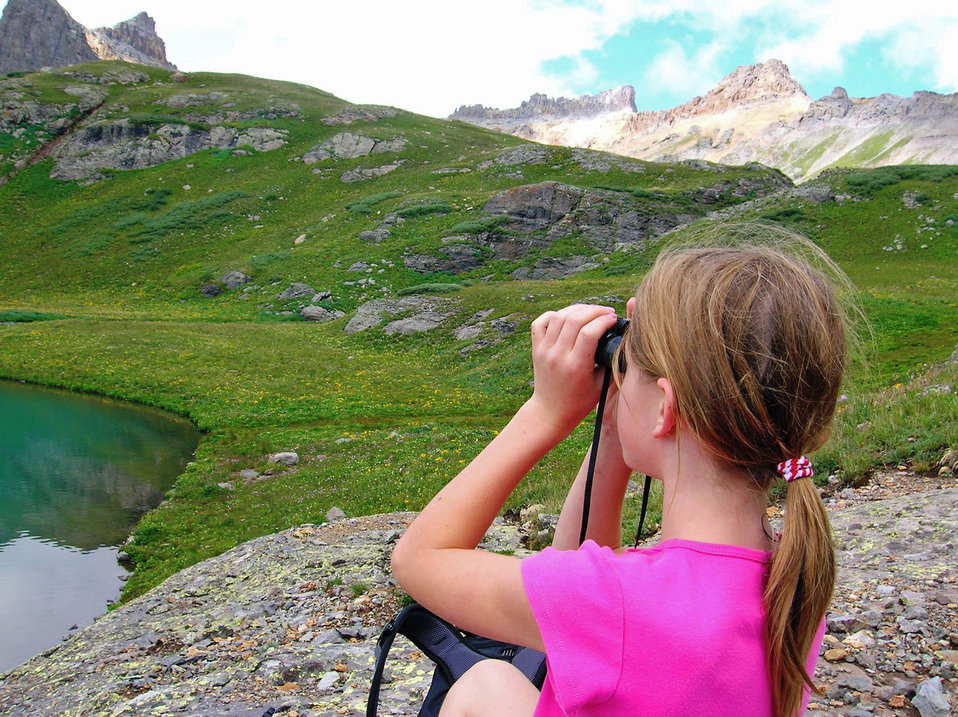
binocs

Make spring break fun for you and the kids with a scavenger hunt for such things as deer or birds. The U.S. Forest Service’s Discover the Forest program aims to inspire tweens (aged 8-12) and their parents to re-connect with nature, experiencing it first-hand. The campaign brings to life the joy and excitement kids have when they discover the wonders of nature, helping create interest in their environment and a lifelong relationship with it.